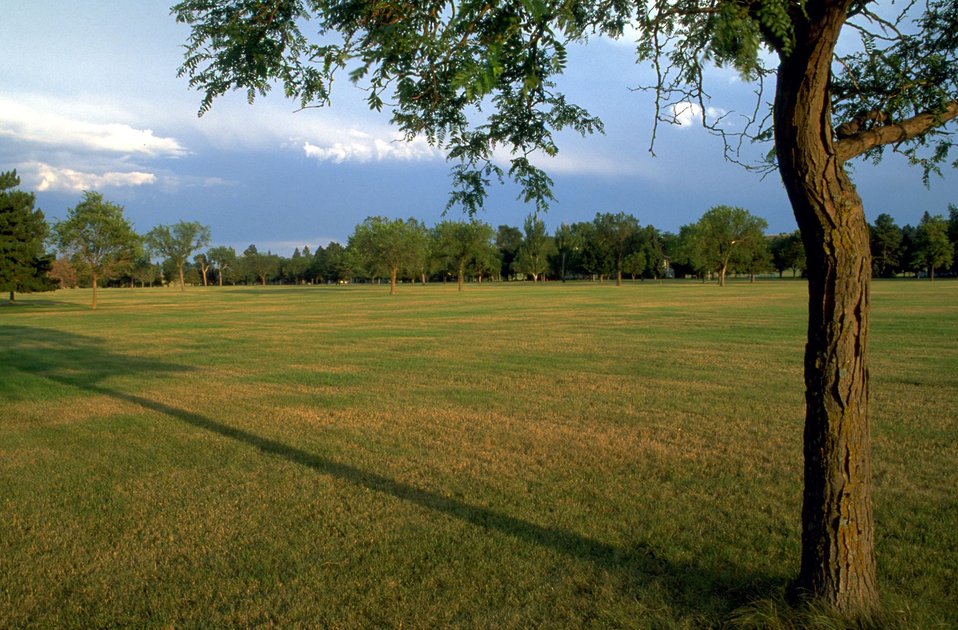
Fort Meade parade grounds